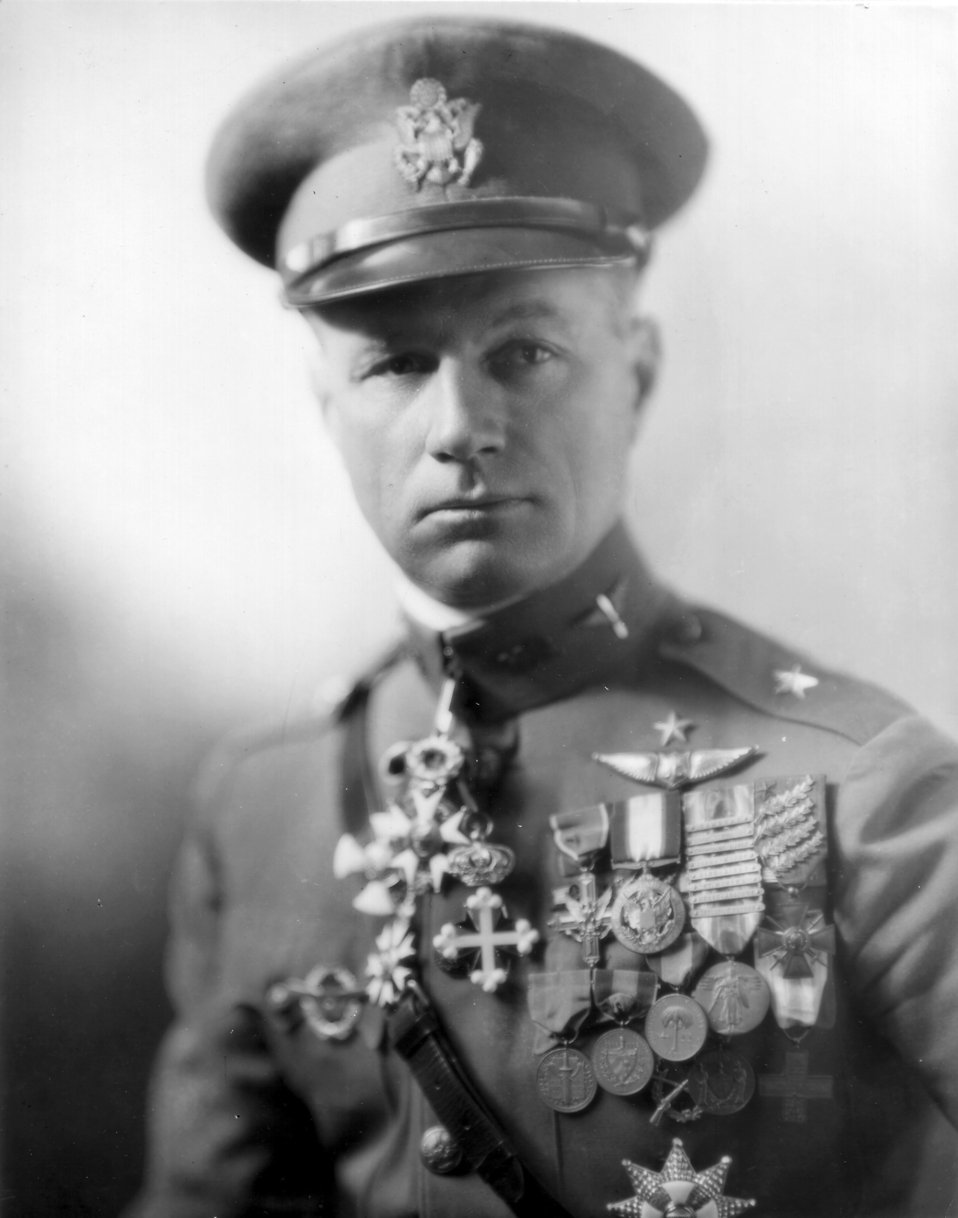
General Mitchell

Brig. Gen. William